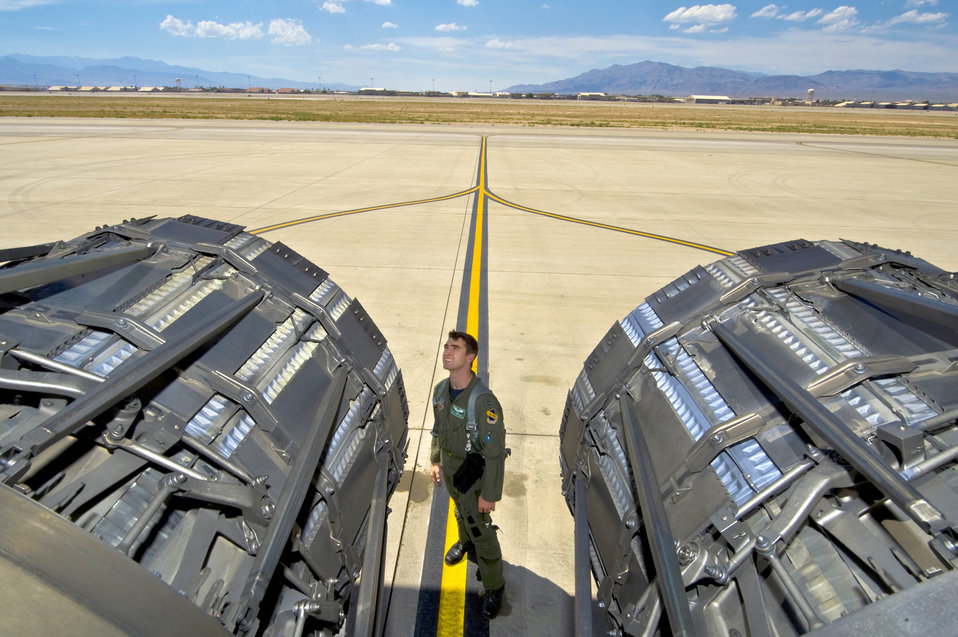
Preliminary inspection

Capt. Nicholas Eberling conducts a preflight check on an F-15 Strike Eagle's engines before a training mission June 16, 2011, during Green Flag-West at Nellis Air Force Base, Nev. Capt. Eberling is a pilot assigned to the 335th Fighter Squadron at Seymour Johnson AFB, N.C.